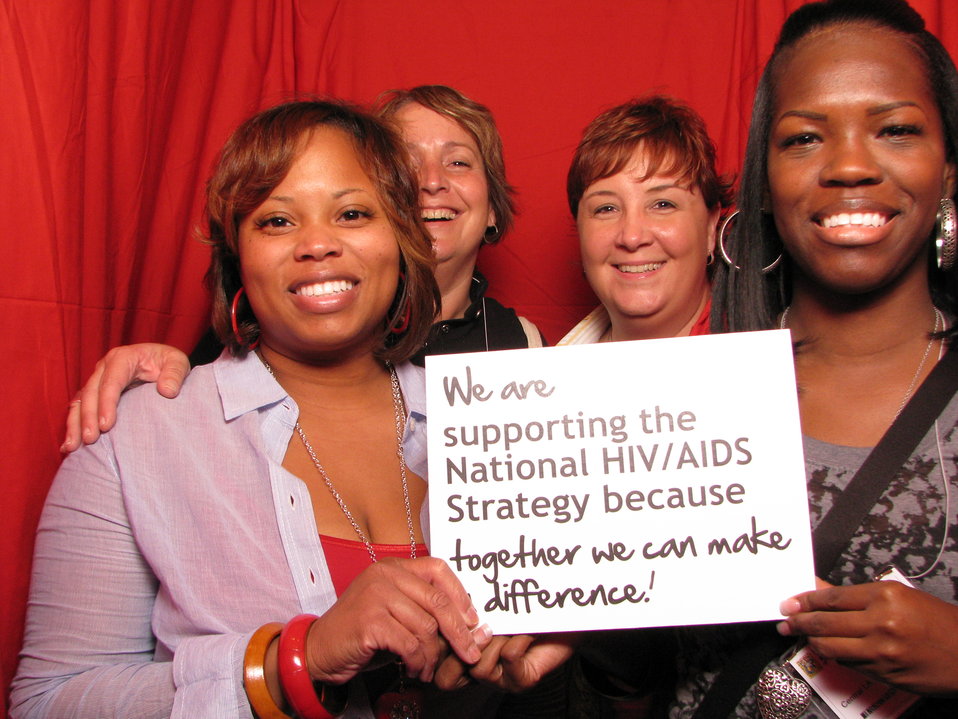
We are supporting the National HIV/AIDS Strategy because together we can make a difference!

From the AIDS.gov photo booth at the U.S. Conference on AIDS, September 2010 (Orlando, FL).